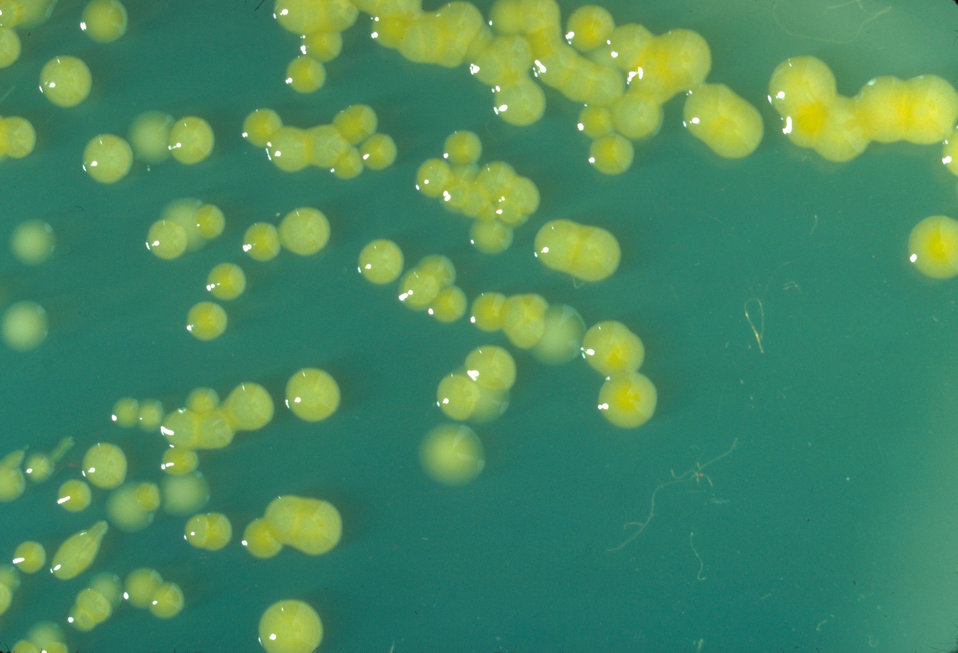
This trypticase soy agar plate culture of E. sakazakii is showing mucoid flat colonies after three days growth at 25� C.